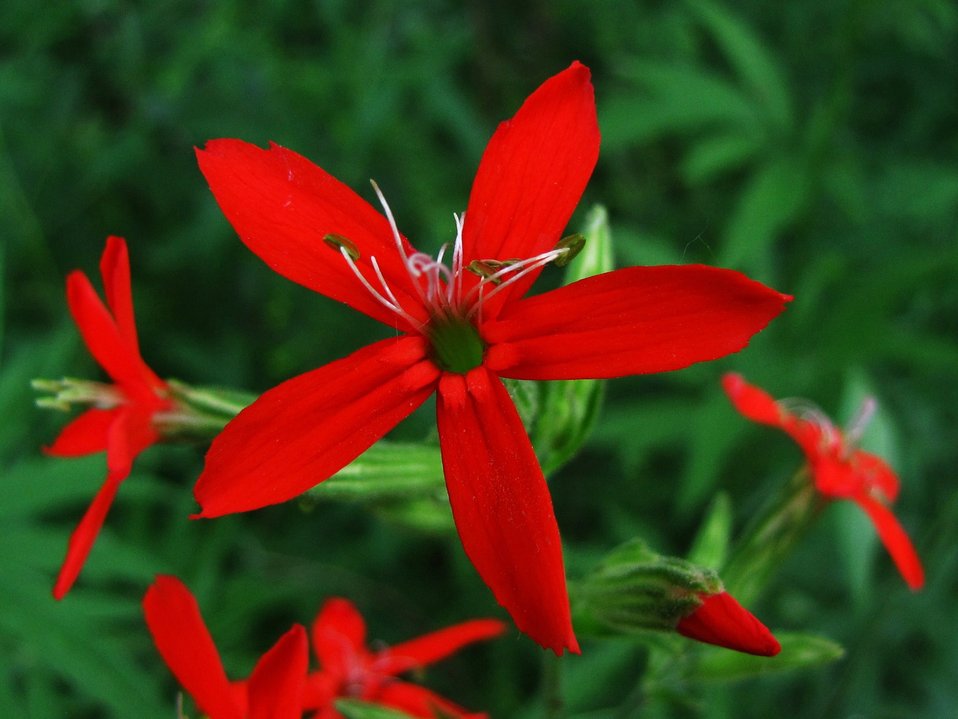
royal catchfly

Port Louisa National Wildlife Refuge, IA